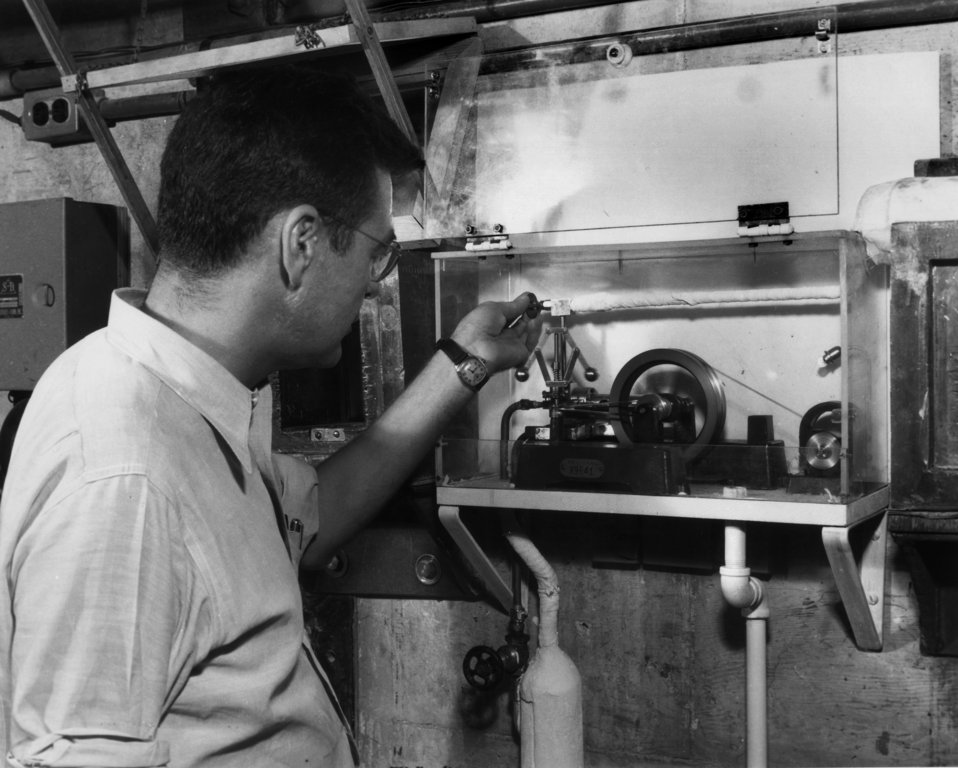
First Atomic Power Plant at X-10 Graphite Reactor

5221-2 DOE photo Ed Westcott
Sept. 3, 1948 Pictured Logan Emlett Oak Ridge Tennessee